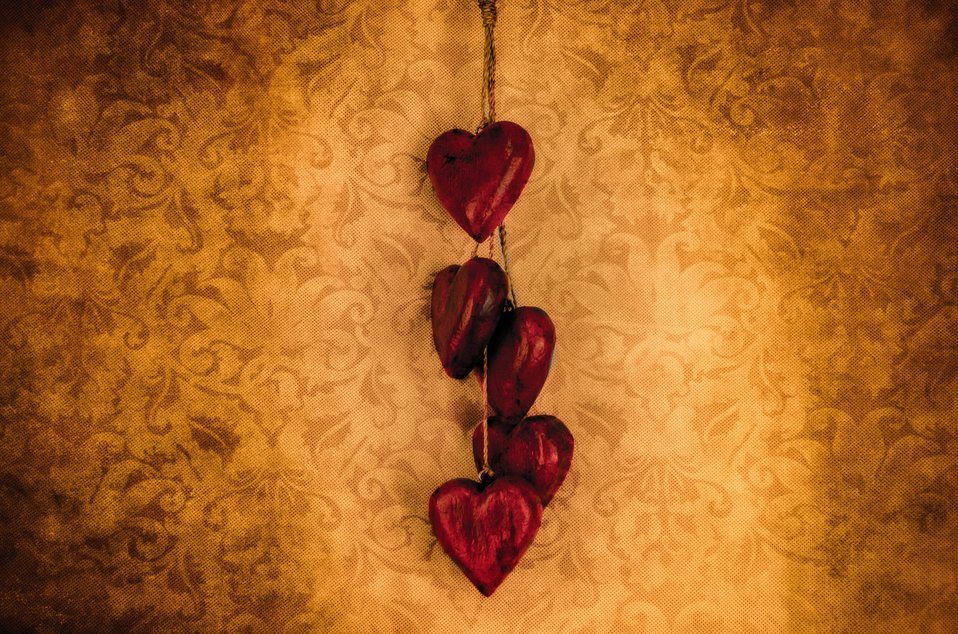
Wooden hearts

Hearts on the old wall.